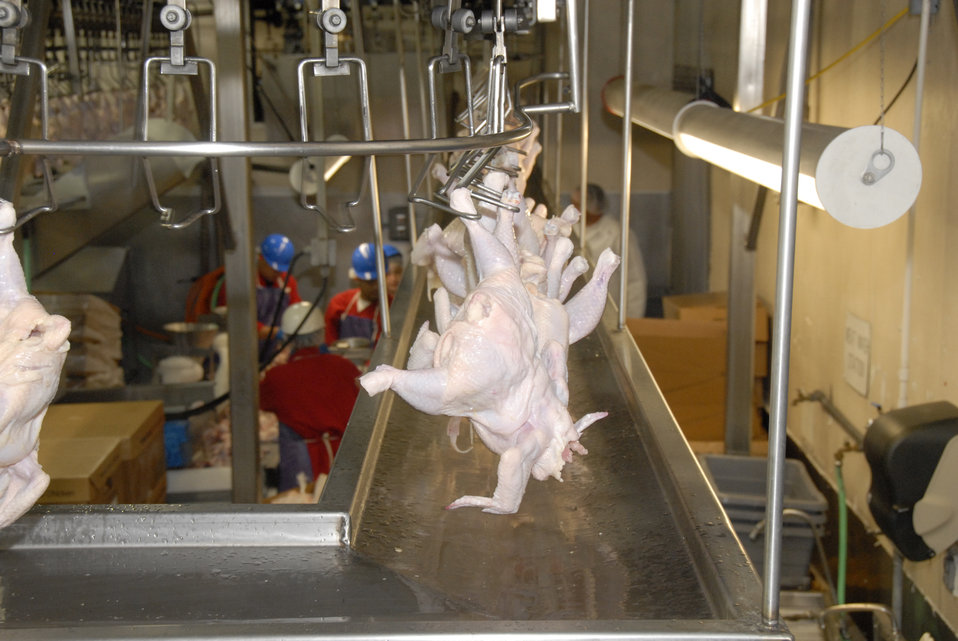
Chickens are carried through the Holmes poultry slaughterhouse in Nixon, Texas on June 10, 2008 on mechanical arms. U.S. Department of Agriculture (USDA) Food Safety and Inspection Service (FSIS) inspectors are on site to ensure the chicken is processed in accordance with USDA FSIS regulations.